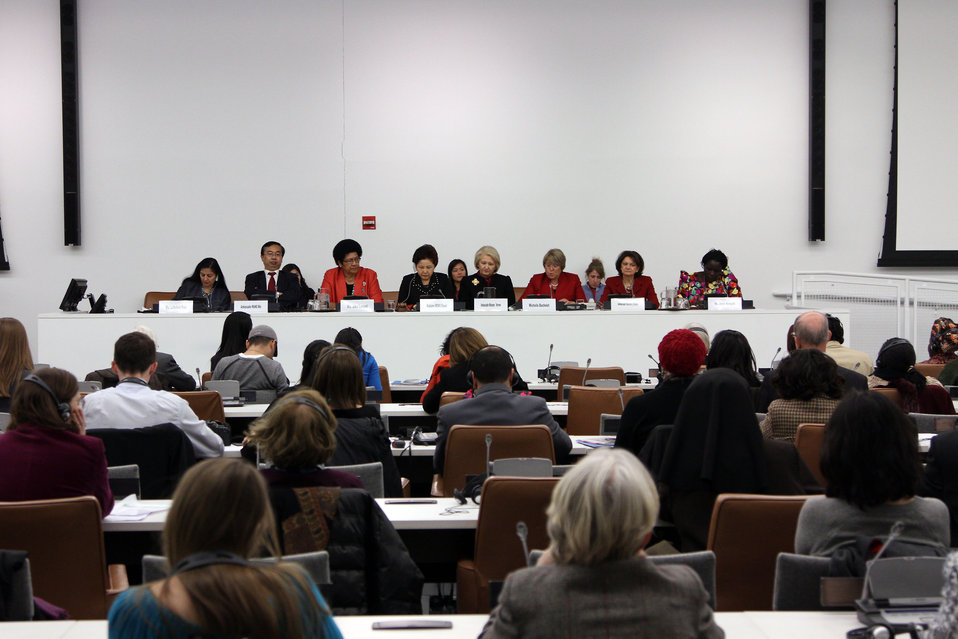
UN Women Executive Director Michelle Bachelet addresses the U.S.-China Panel on Rural Women and Sustainable Development, including Ambassador-at-Large for Global Women's Issues Melanne Verveer and U.S. Deputy Permanent Representative to the United Nations, Ambassador Rosemary DiCarlo, in New York, New York, on February 27, 2012.